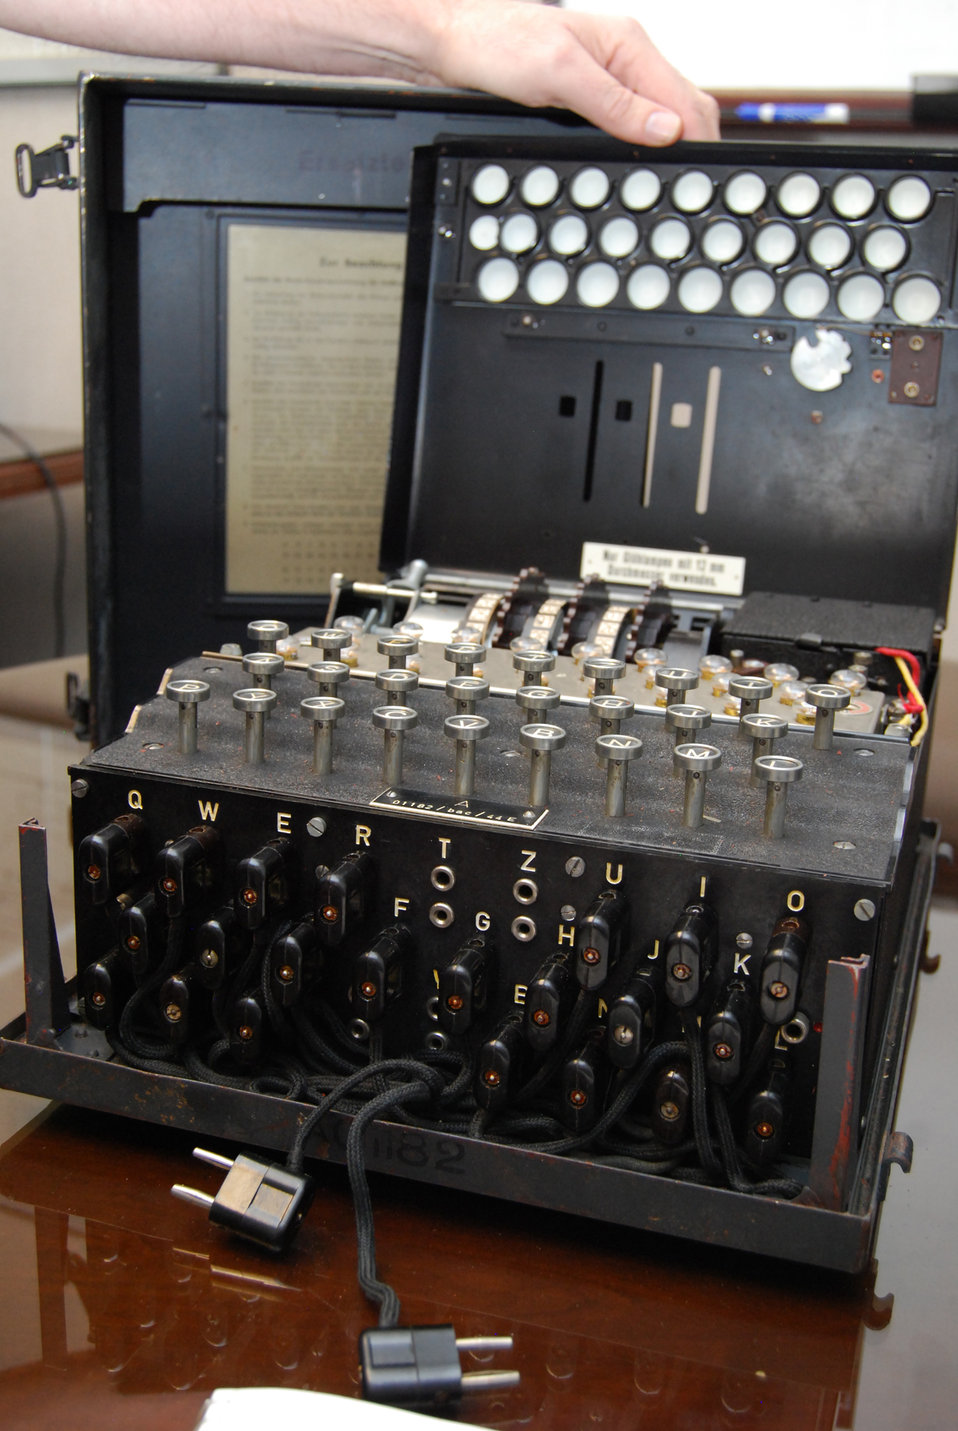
Academy cryptological equipment

The Enigma machine pictured here is on permanent loan to the Air Force Academy Department of Computer Science from the National Cryptologic Museum at Fort George G. Meade, Md. The Computer Science department staff will use the machine in its Introduction to Computing class and its Cryptology class. This Enigma machine, Serial No. 01182, was used by the German Luftwaffe during World War II.